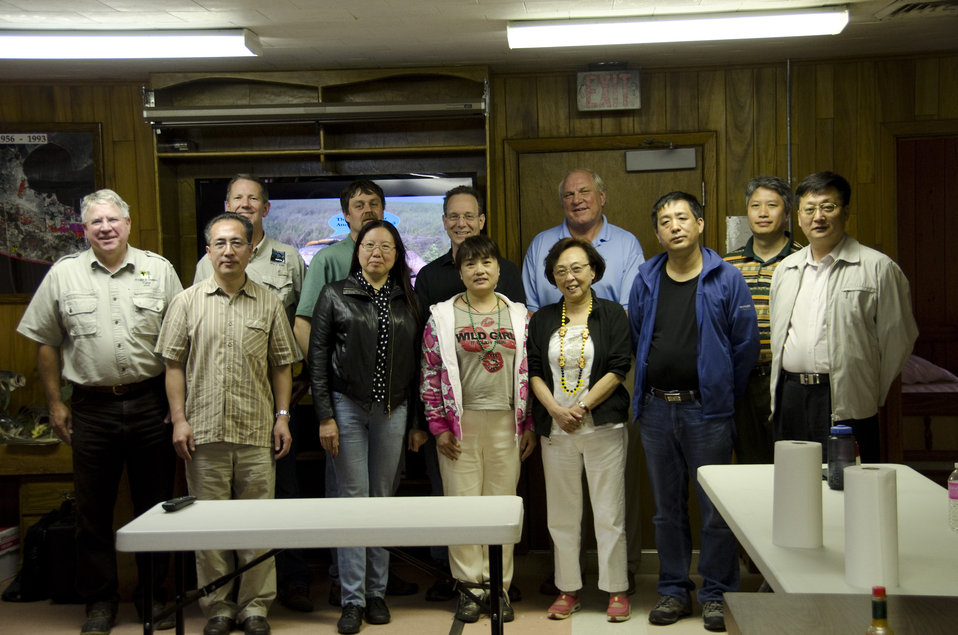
Chinese delegation

Representatives from the Chinese and U.S. CITES authorities learned about alligator conservation and farming from the Louisiana Department of Wildlife and Fisheries